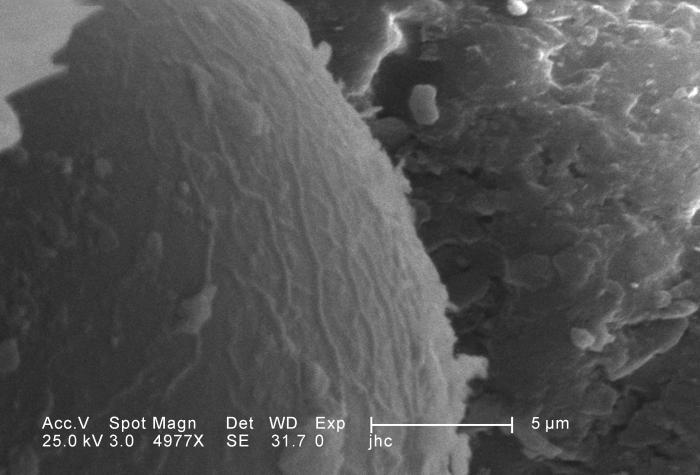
Under a high magnification of 4977X, this scanning electron micrograph (SEM) depicted some of the ultrastructural morphology displayed on the head region of a larval antlion, surrounding the region of its right compound eye. This larva is sometimes referred to as a 'doodlebug', because of the trails it leaves in the soft sand as it hunts for prey. This arthropod, i.e., jointed legs, undergoes dramatic morphologic changes when it metamorphoses into a beautiful flying antlion lacewing. Note the particulate debris dispersed over the exoskeletal surface, which represents sand, and other constituents of the antlion's natural environment. See PHIL 11812 through 11817 for additional views of the eye under successively greater madnifications.